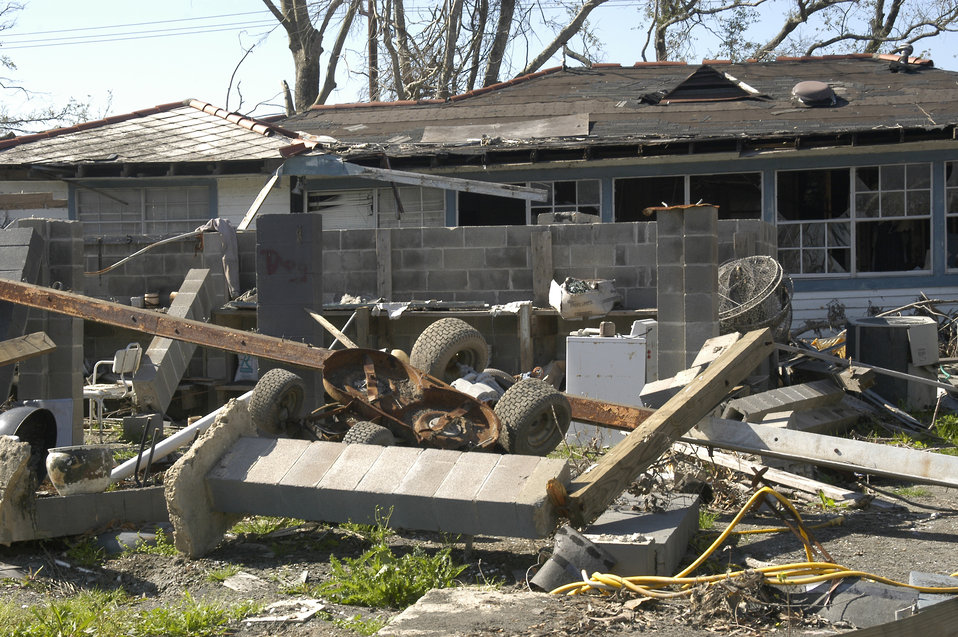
Homes in Plaquemines Parish, LA, were demolished by hurricane Katrina’s 20-foot storm surge that overwhelmed the city’s levees. Hurricane Katrina was the 6th strongest hurricane in U.S. history and the 5th deadliest. Katrina made landfall on Monday morning, August 29, 2005 as a Category 3 hurricane with sustained winds of 125 mph with over a 20-foot storm surge. Katrina caused catastrophic damage over 90 thousand square miles across Louisiana with an estimated $75 billion dollars in damage. The total economic impact to the Gulf Coast was estimated at over $150 billion. 80% of New Orleans, LA, was underwater with some areas more than 20 feet deep. Less than a month later southern Louisiana was struck by a second Category 3 hurricane Rita inflicting more damage in the southwestern areas of Louisiana adding an addition $12 billion worth of damage to the already beleaguered state. The U.S. Army Corps of Engineers (USACE) under the auspices of the Federal Emergency Management Agency (FEMA) was the lead service in providing assistance to the citizens of Louisiana. The U.S. Department of Agriculture (USDA) supplied emergency food aid, emergency loan assistance to farmers and home owners, and USDA personnel from around the nation volunteered their time and muscle to aid in the recovery operations.